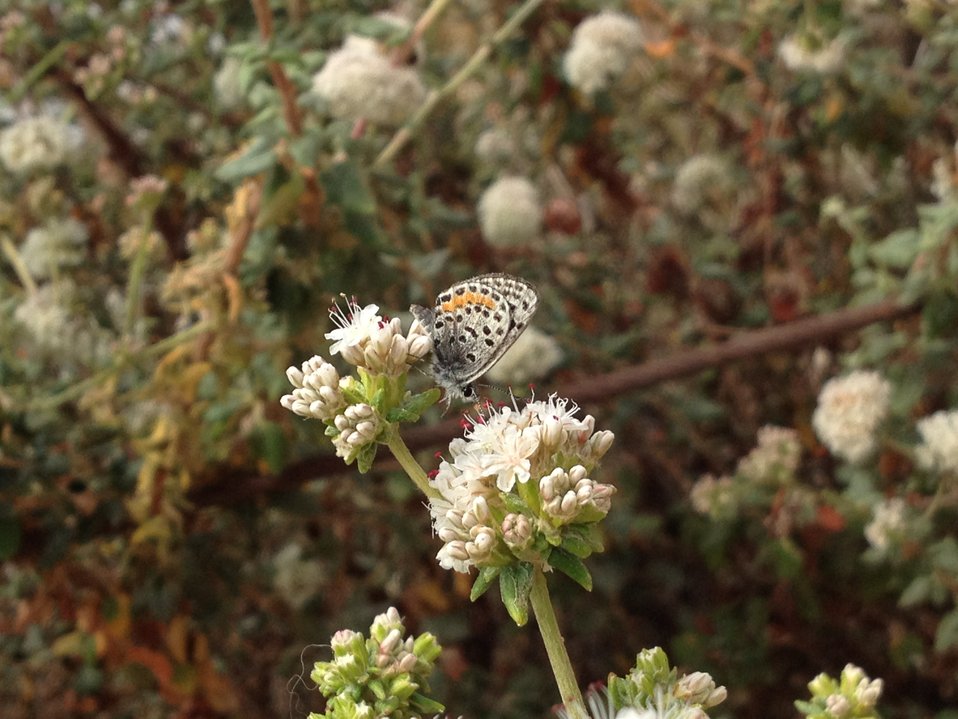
El Segundo blue butterfly (Euphilotes battoides allyni)

A federally endangered species, the El Segundo blue butterfly depends on the coast buckwheat plant at each of its four life stages (egg, larva, pupa, and adult). It is found only along coastal dune habitat on the southeastern shores of Santa Monica Bay, Los Angeles County, California.